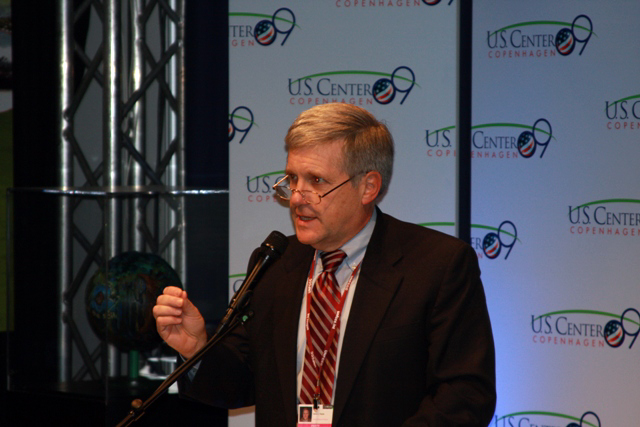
Mitigating Climate Change: Capturing Carbon Underground, in Soil, and in Plants at COP-15

David Hayes, Deputy Secretary of the Interior participates in a panel presentation, “Mitigating Climate Change: Capturing Carbon Underground, in Soil, and in Plants” at the U.S. Center at COP15, Bella Center, Copenhagen, Denmark on December 11, 2009.